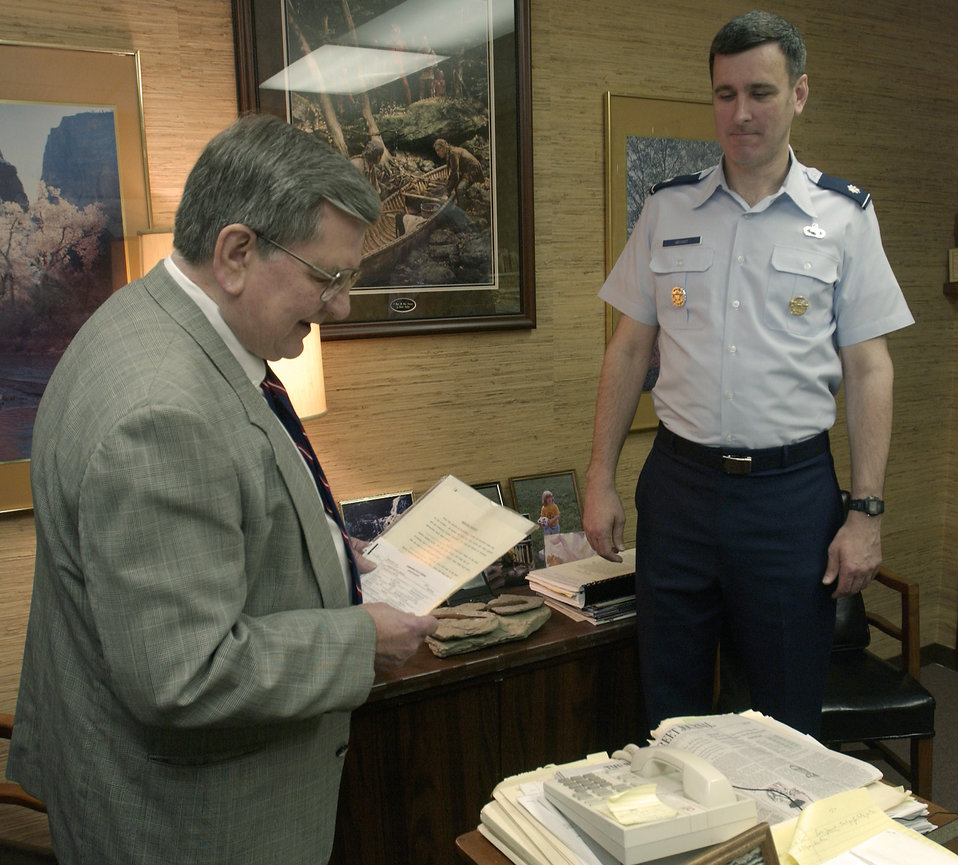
Technology unites Airmen in matrimony

MCCLEAN, Va. -- Attorney Conrad Marshall (left) officiates the wedding of Lt. Col. Michael Bryant and Maj. Heather Villasenor on the phone April 26. Major Villasenor is deployed to Southwest Asia as a senior intelligence duty officer. Colonel Bryant is the Joint Staff target operations division chief in Washington.